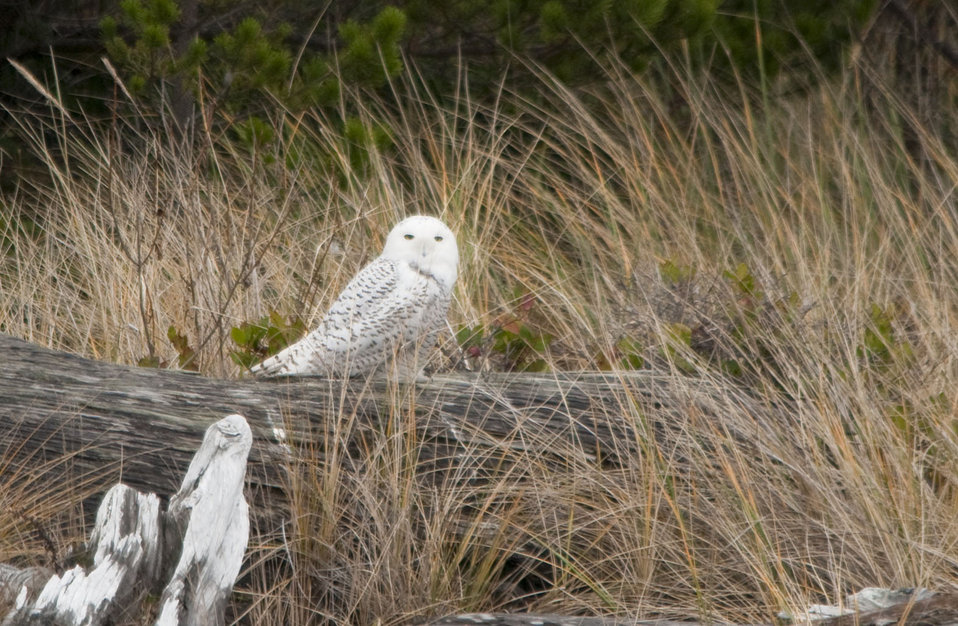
snowy owl

adjacent to Siletz Bay National Wildlife Refuge, OR
December 31, 2011